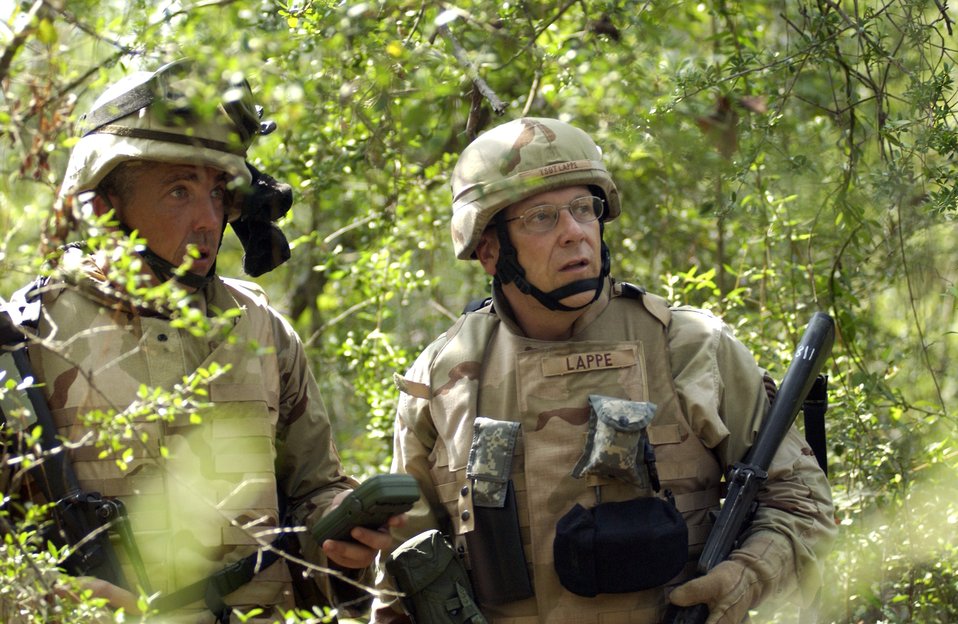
Air Force trains to fill Army deployments

Master Sgt. Jim Clifton (left) and Tech. Sgt. Gene Lappe find a land navigation point Aug. 30 utilizing the techniques they learned at Camp Shelby, Miss. Camp Shelby is one of several Army installations providing training to military personnel preparing to deploy to Southwest Asia.